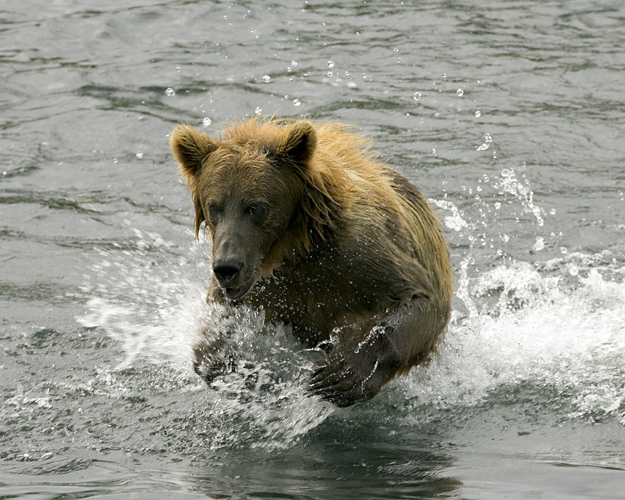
Brown bear splashing in a stream.